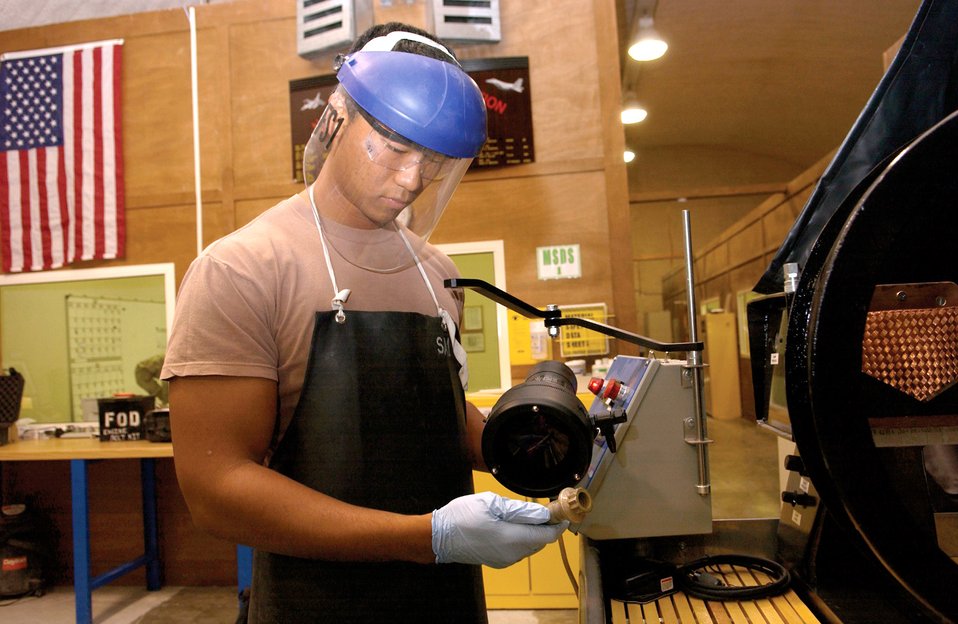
Operation Iraqi Freedom Operation Enduring Freedom

SOUTHWEST ASIA (AFPN) -- Senior Airman Antwon Gallagher uses the magnetic particle method to check for cracks in an aircraft part. Airman Gallagher is deloyed here from Grand Forks Air Force Base, N.D.